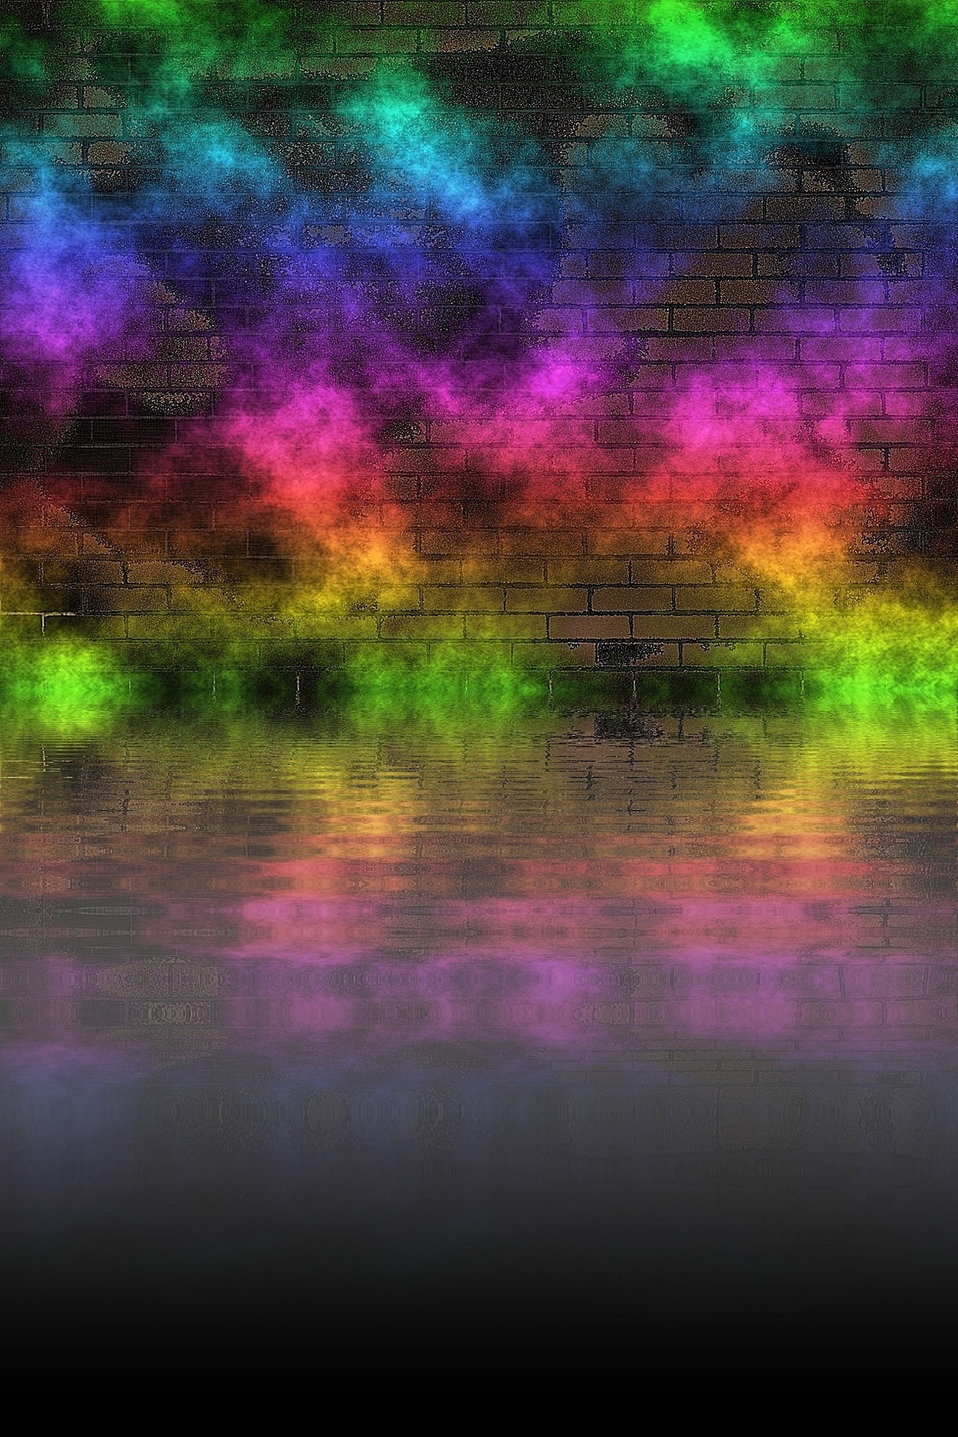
Background 397

Background.